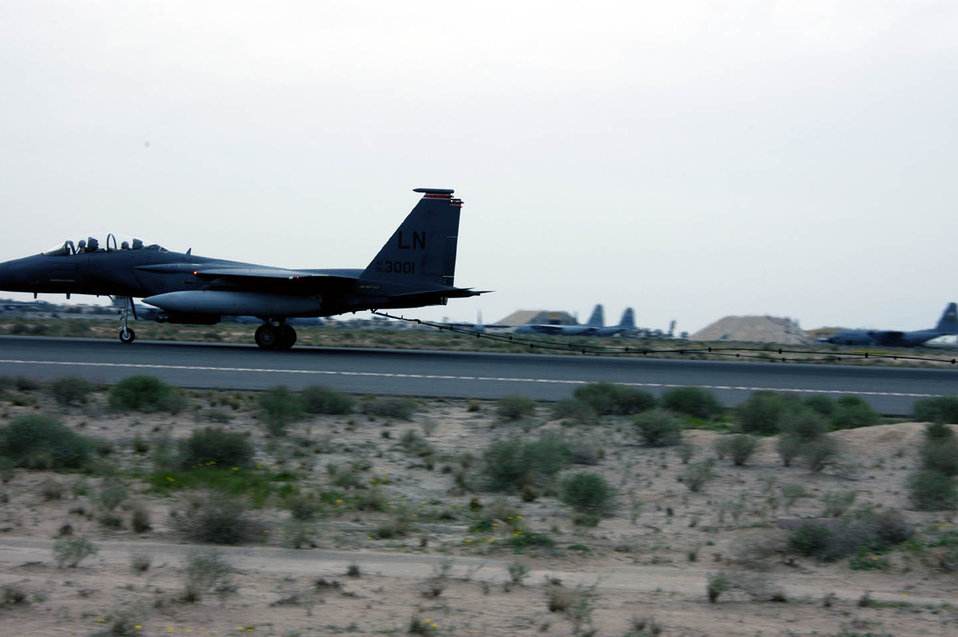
CE Airmen ready to snag an Eagle

SOUTHWEST ASIA -- An F-15 Eagle is slowed from a 120 mph taxi to a stop by the mobile aircraft arresting system cable and tape which are attached to the two rotary friction energy absorber systems.